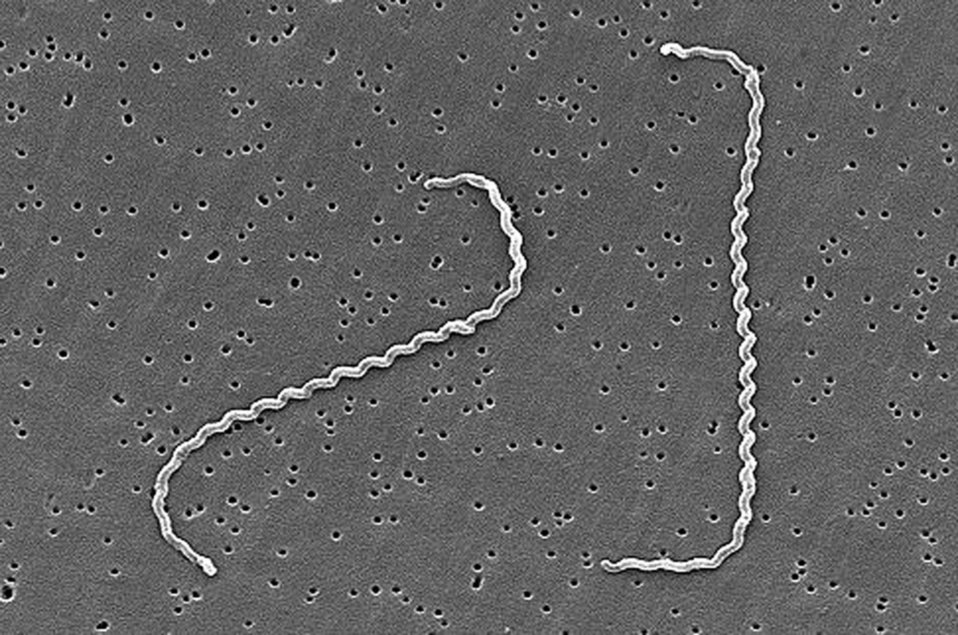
Scanning electron micrograph of Leptospira interrogans strain RGA.